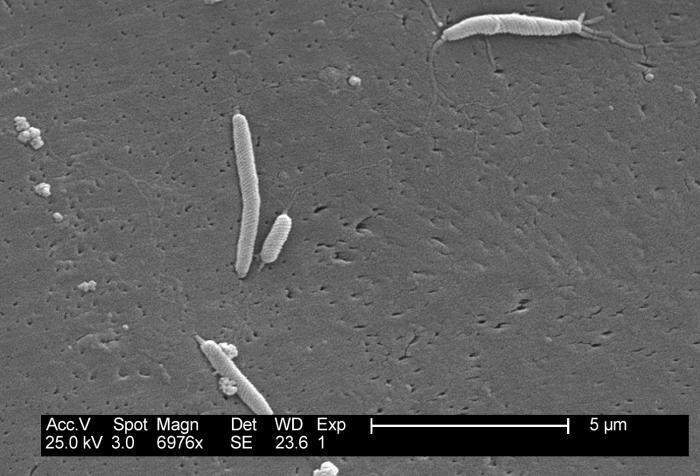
This scanning electron micrograph depicts a number of Flexispira rappini bacteria, magnified 6976x